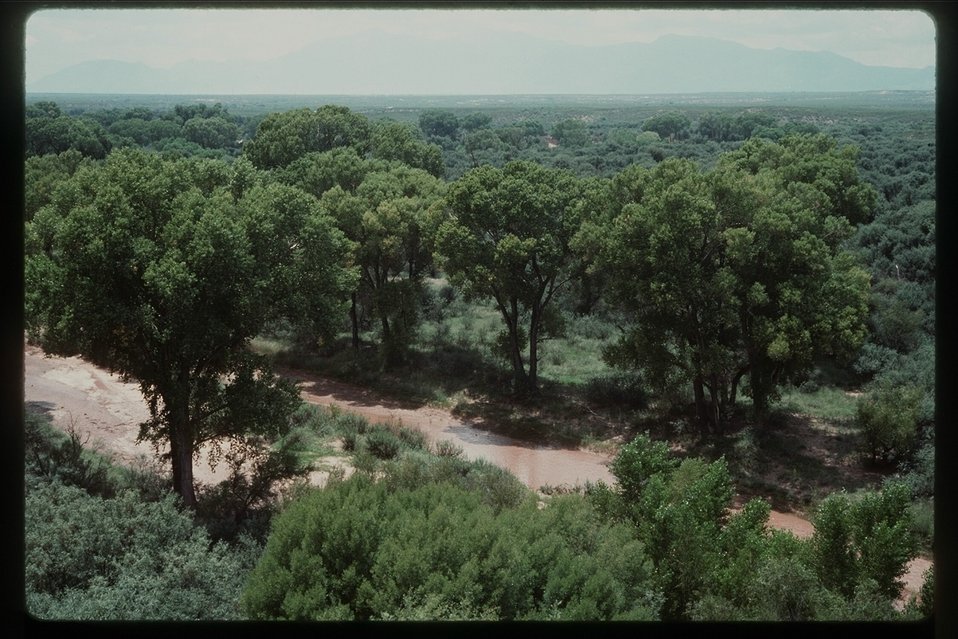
The primary purpose for the designation of the San Pedro Riparian National Conservation Area is to protect and enhance the desert riparian ecosystem, a rare remnant of what was once an extensive network of similar riparian systems throughout the southwest.